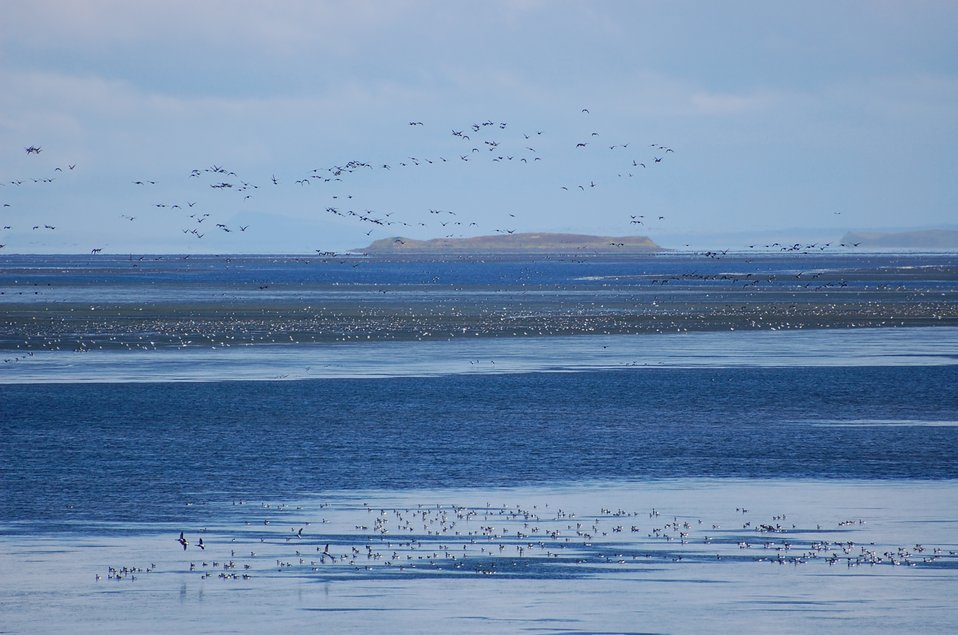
Brant at Izembek Lagoon

Izembek National Wildlife Refuge